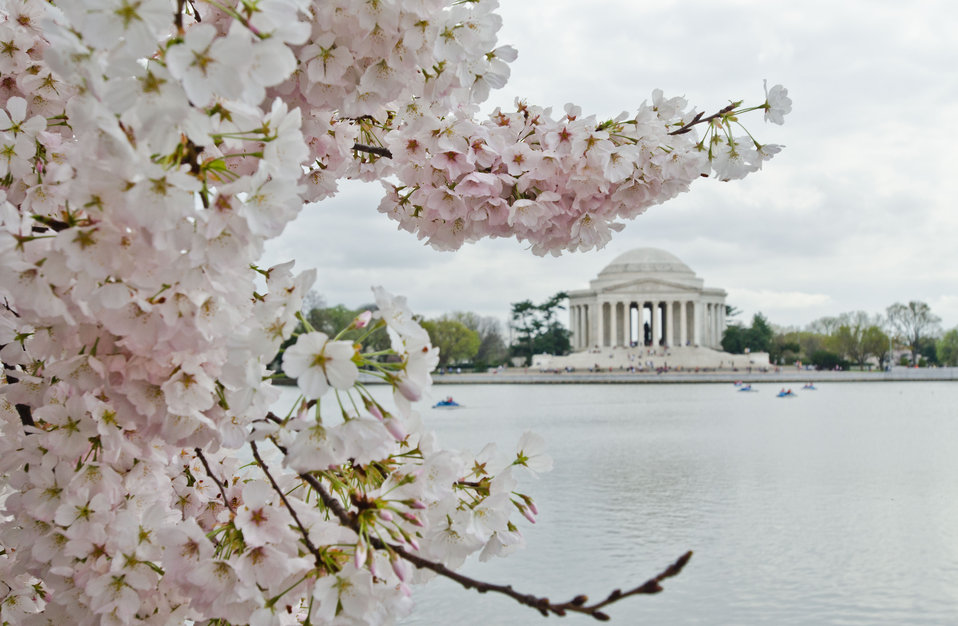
Jefferson Monument surrounded by Cherry blossoms in Washington, D.C., on Tuesday, March 20, 2012.